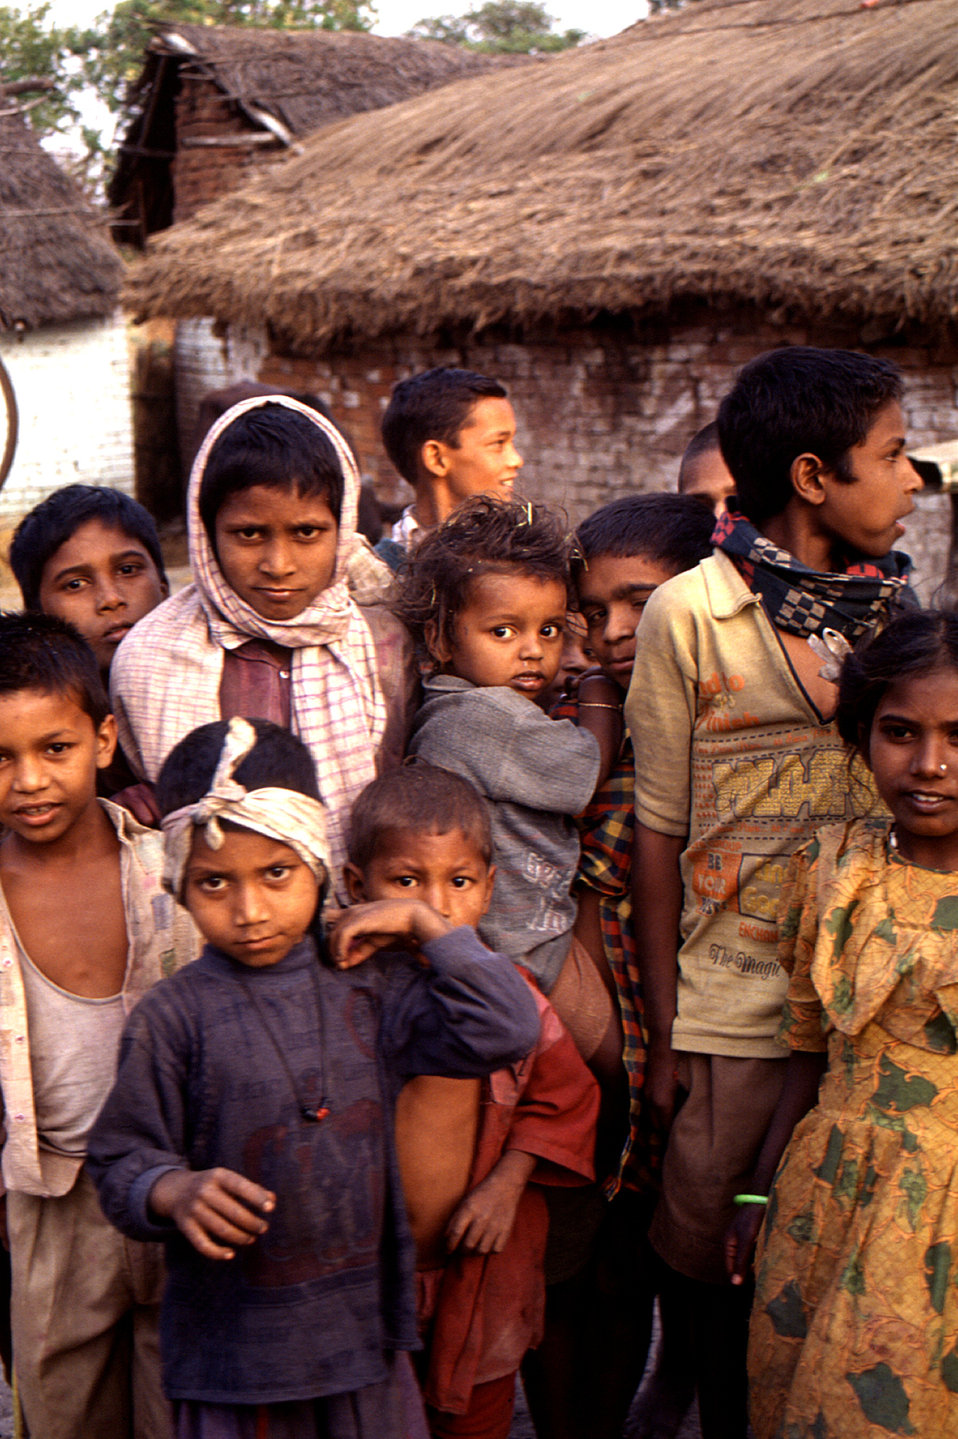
This 2000 photograph depicted a group of children who were residents of one of the towns into which the Stop Transmission of Polio (Stop) tem members entered during their rounds through the country of India, as they immunized the inhabitants. Children were frequently the first to greet visitors in the rural areas, with older brothers and sisters often accompanied by their younger siblings. This was one of a number of images provided by Chris Zahniser, B.S.N., R.N., M.P.H., a STOP Transmission of Polio (STOP) immunization initiative team member and photographer, who was assigned to the state of Uttar Pradesh in northern India, and spent three months working in the Districts of Gorakhpur and Deoria.